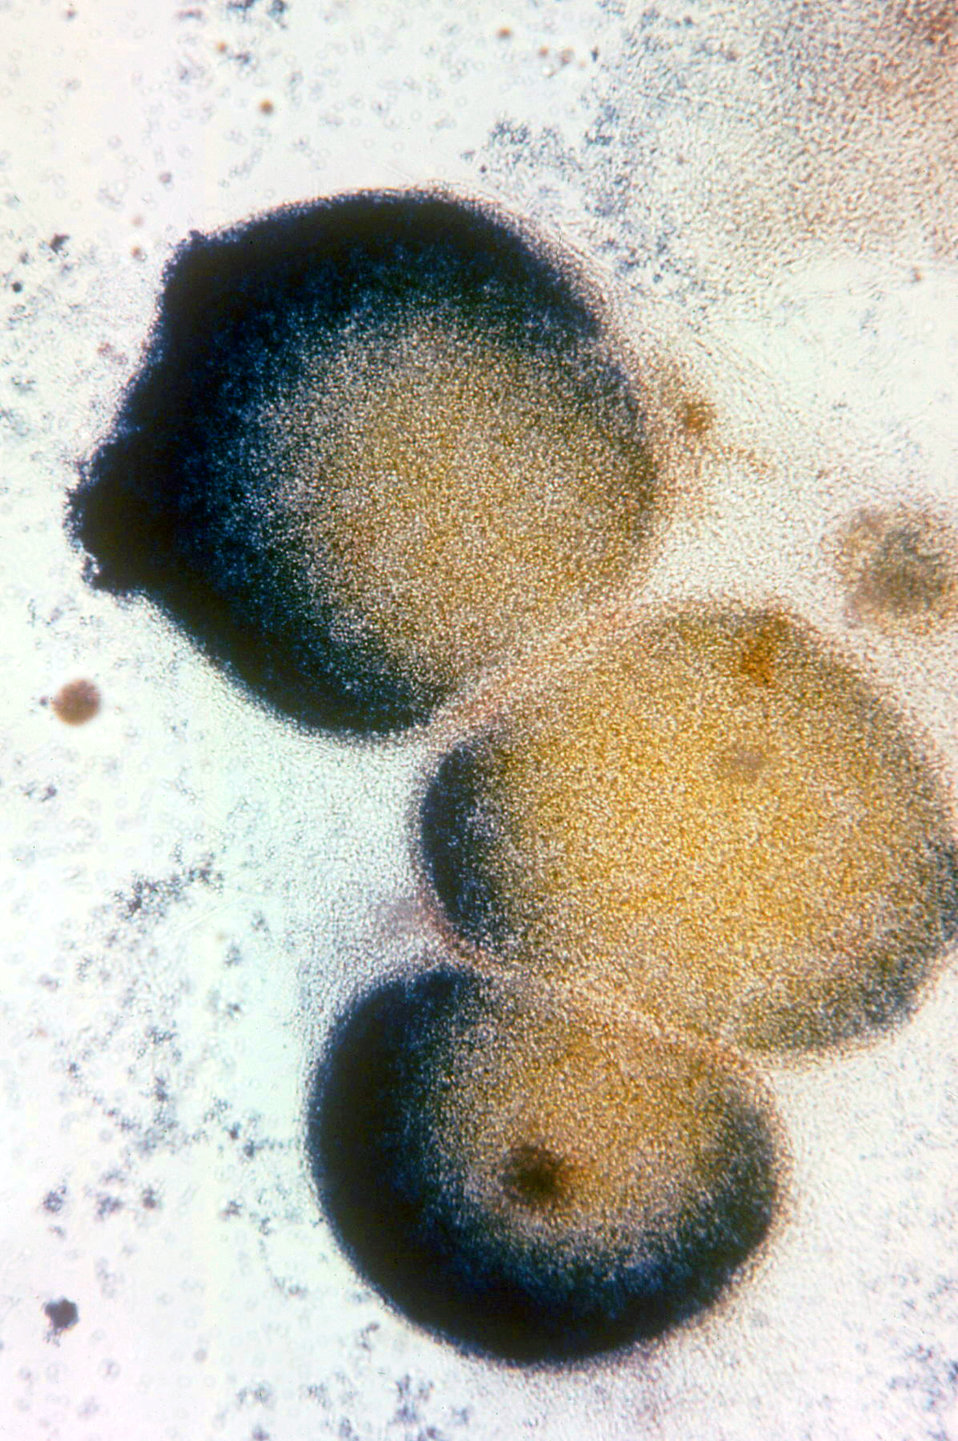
Magnified at 100x, this photomicrograph depicted a number of 'cleistothecia' of the fungal organism, Talaromyces flavus var. flavus. A cleistothecium is an enclosed, spore-bearing structure displayed by some fungi, which is able to release its contents of spores under the right conditions. The right conditions are those that would bring about the disintegration, due to decay, of the cleistothecium.